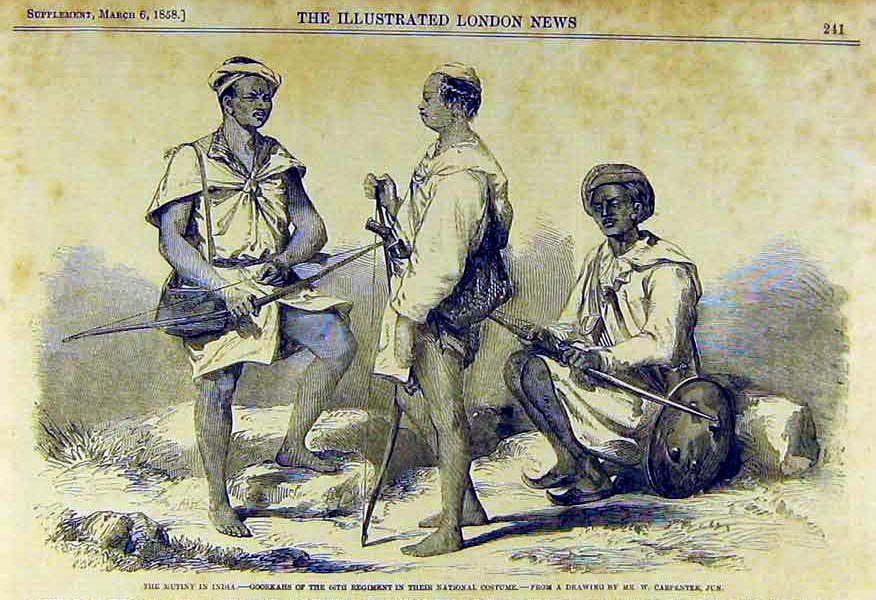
'Goorkahs of the 66th Regiment in their national costume,' Illustrated London News, 1858